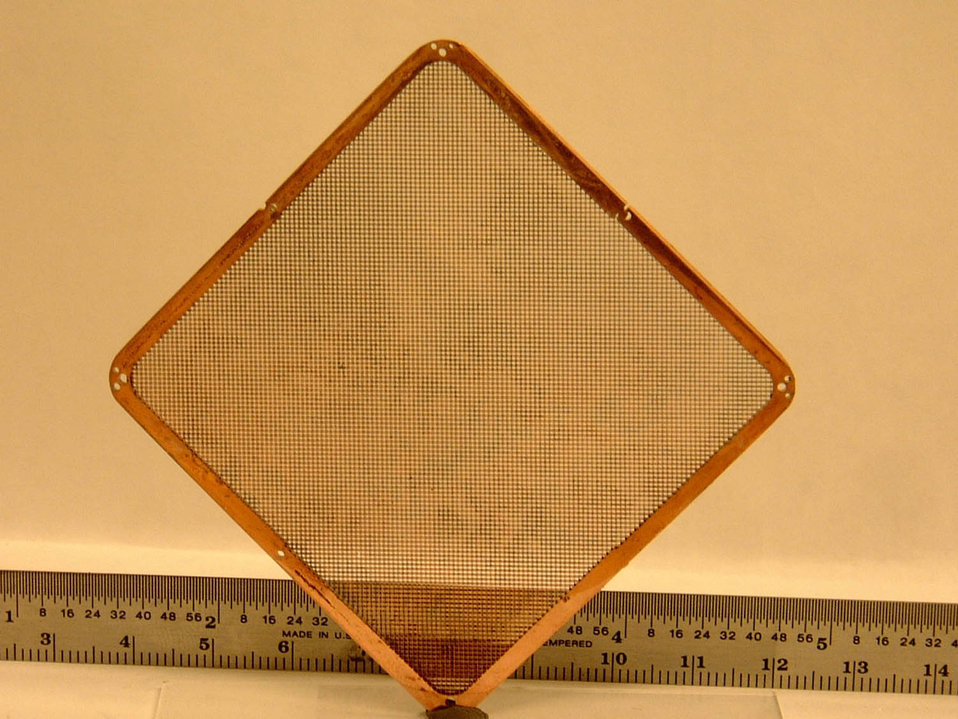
Anti-scatter grids can improve x-ray imaging for mammography, chest x-rays and other medical applications.

ANL and Creatv Micro Tech, Inc., won an R&D 100 award from R&D magazine, identifying it as one of the top scientific and technology innovations in the world introduced as a product during 2005. Two areas where it's important for medical imaging are mammography and gamma ray imaging. Both are important for early detection of cancer and other diseases. Anti-scatter grids are placed between the target and the imager to reduce this x-ray scattering. This method can make two dimensional grids that reduce scatter to less than one percent.